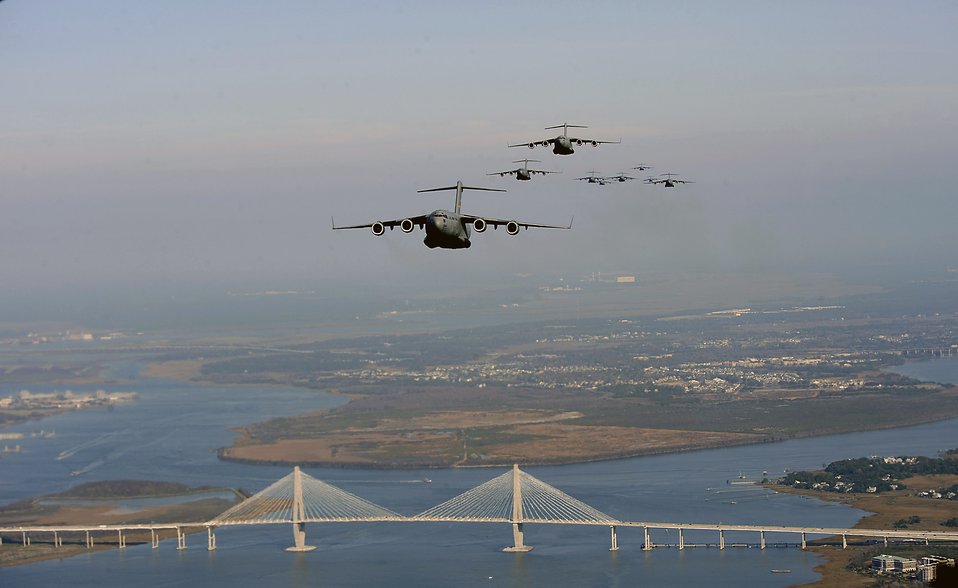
Show of force

C-17 Globemaster IIIs from the 437th and 315th airlift wings fly in formation Dec. 18 over Charleston, S.C. The C-17s participated in a strategic brigade airdrop exercise involving a 13-ship formation to meet the Army's goal of airdropping a brigade's worth of troops and equipment (about 3,250 Soldiers and 3,450 tons of equipment). The C-17s are from Charleston Air Force Base, S.C.